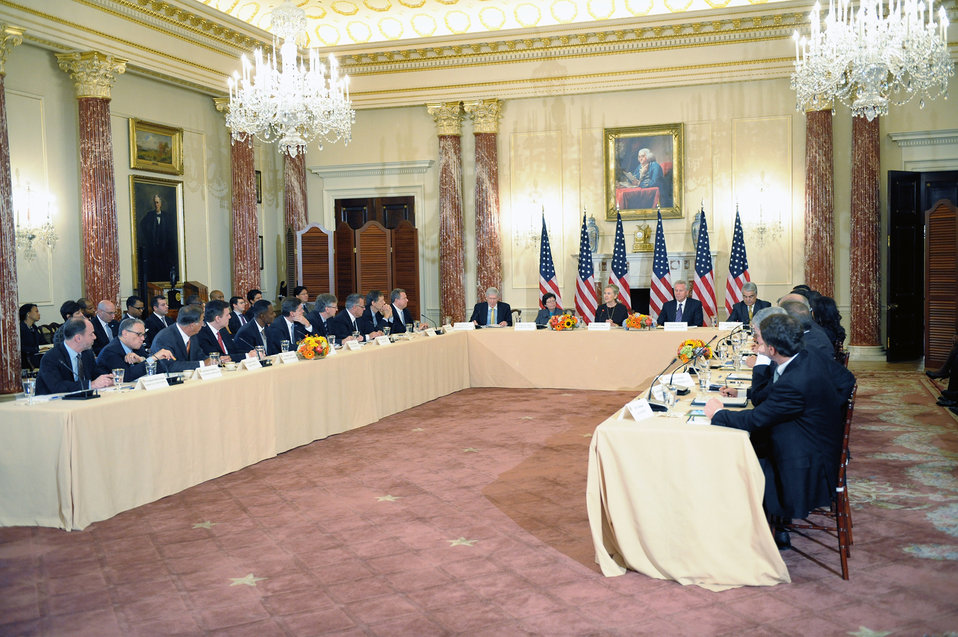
Secretary Clinton Hosts the Jobs Council Investment Discussion Roundtable

U.S. Secretary of State Hillary Rodham Clinton hosts the Jobs Council Investment Discussion Roundtable at the U.S. Department of State in Washington, D.C., on October 7, 2011.